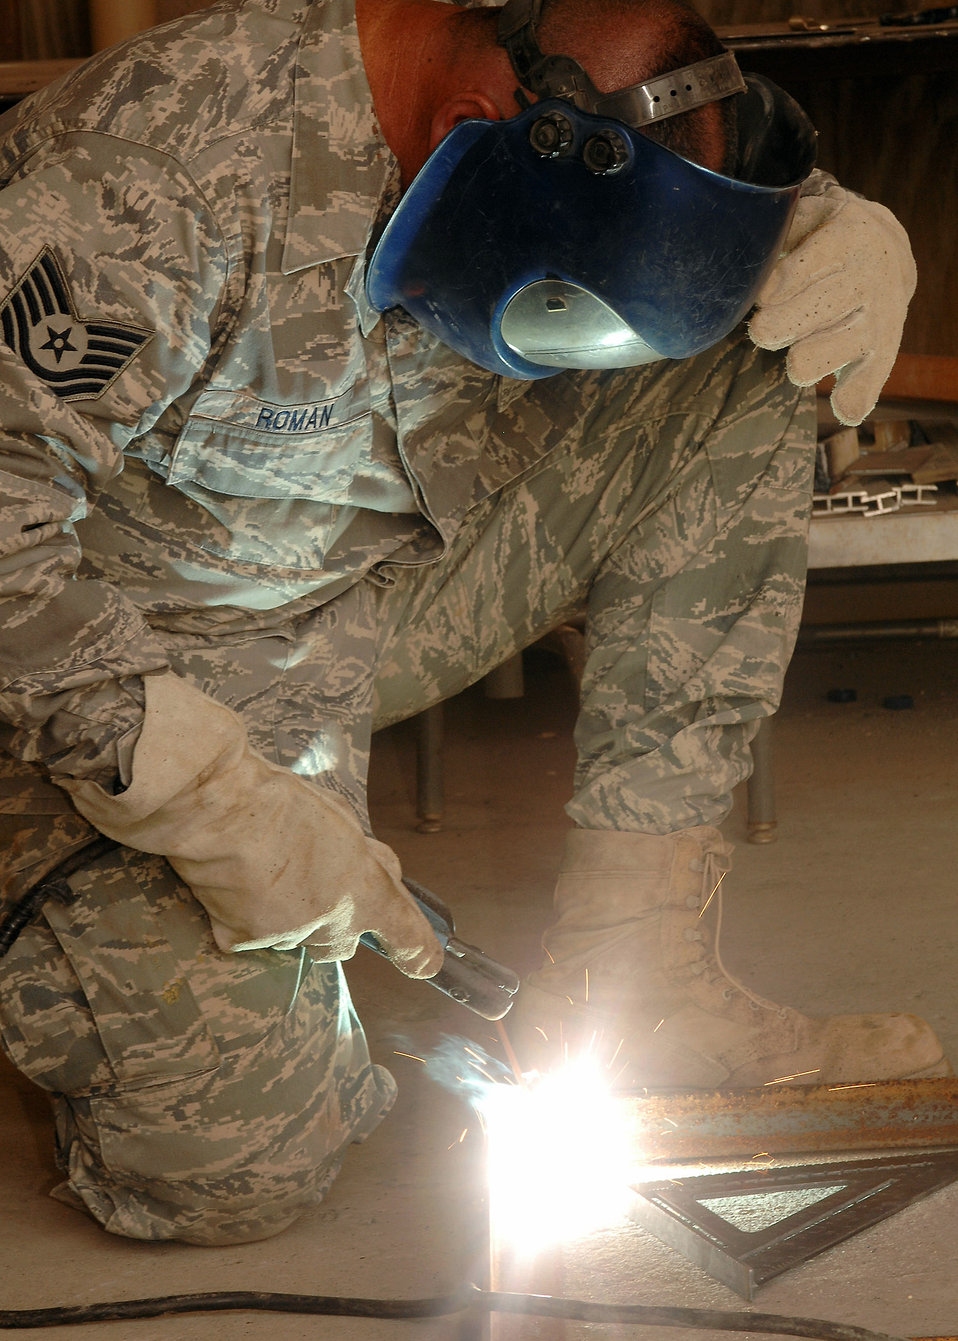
Working dog kennels receive massive renovation

Sparks fly as Tech. Sgt. Anthony Roman, deployed to the 386th Civil Engineer Squadron, uses an arc welder to join a frame together on July 11 at a base in Southwest Asia. The Civil Engineer Squadron is completing a project to increase the square footage of the K-9 kennels for the 386th Expeditionary Security Forces Squadron. The metal frames will be used to build new ramps for the dogs. Sergeant Roman is deployed from the 156th Airlift Wing, Muniz Air National Guard Base, Puerto Rico.